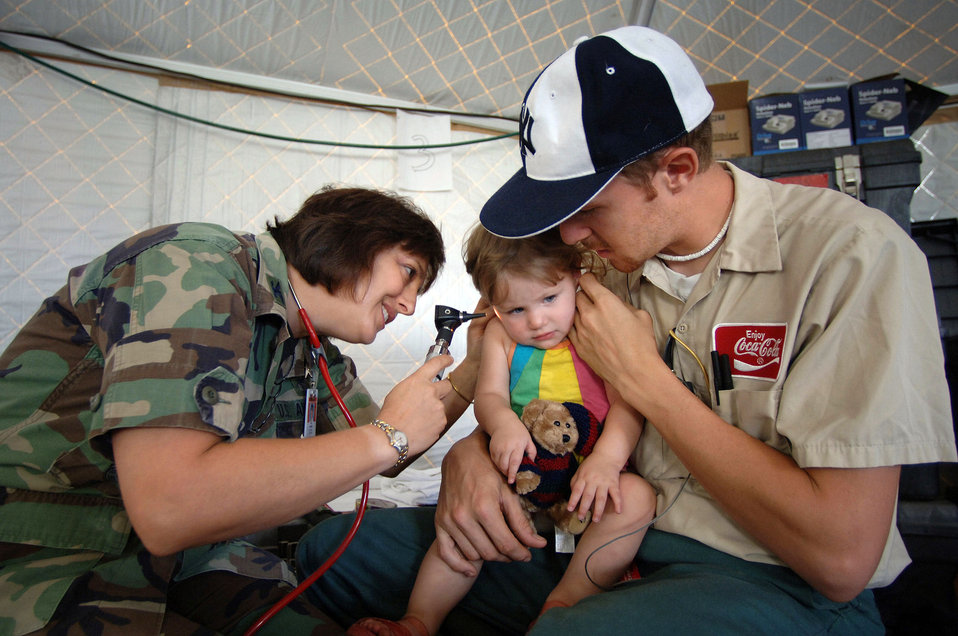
Keesler helping restore Gulf Coast medical infrastructure

GULFPORT, Miss. -- Col. (Dr.) Ann Farash treats 19-month-old Alexia at a treatment facility set up outside the Garden Park Medical Center hospital here. Dr. Farash, a pediatrician, and other medical providers with the 81st Medical Group from nearby Keesler Air Force Base are working with the Federal Emergency Management Agency to provide medical care to victims of Hurricane Katrina.